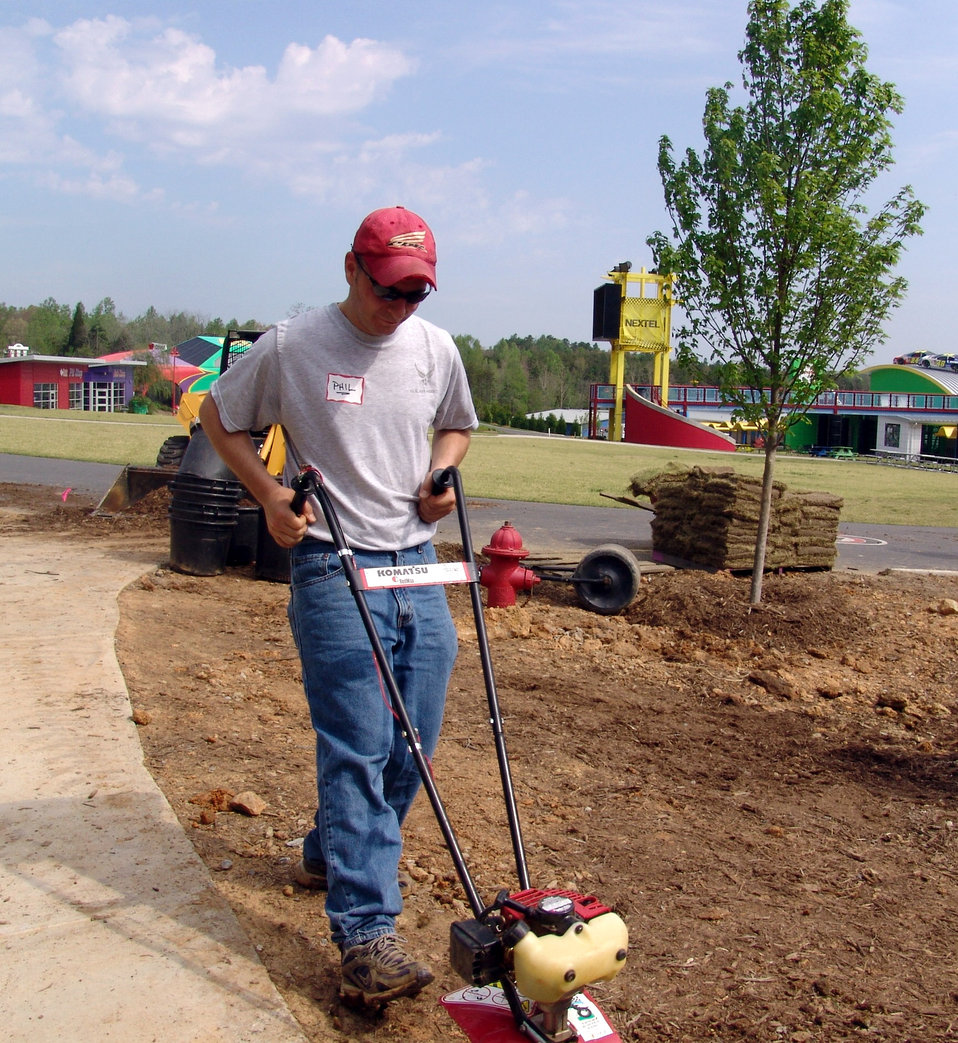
Airmen take on landscaping projects for children's sake

Tech. Sgt. Phillip Howell prepares the ground by tilling up the soil April 26 at Victory Junction Gang Camp in North Carolina. With one day's work, 27 337th Recruiting Squadron volunteers helped the landscaping team complete projects that could have taken them a week. Sergeant Howell is a 337th RCS enlisted accessions recruiter from Salisbury, N.C.